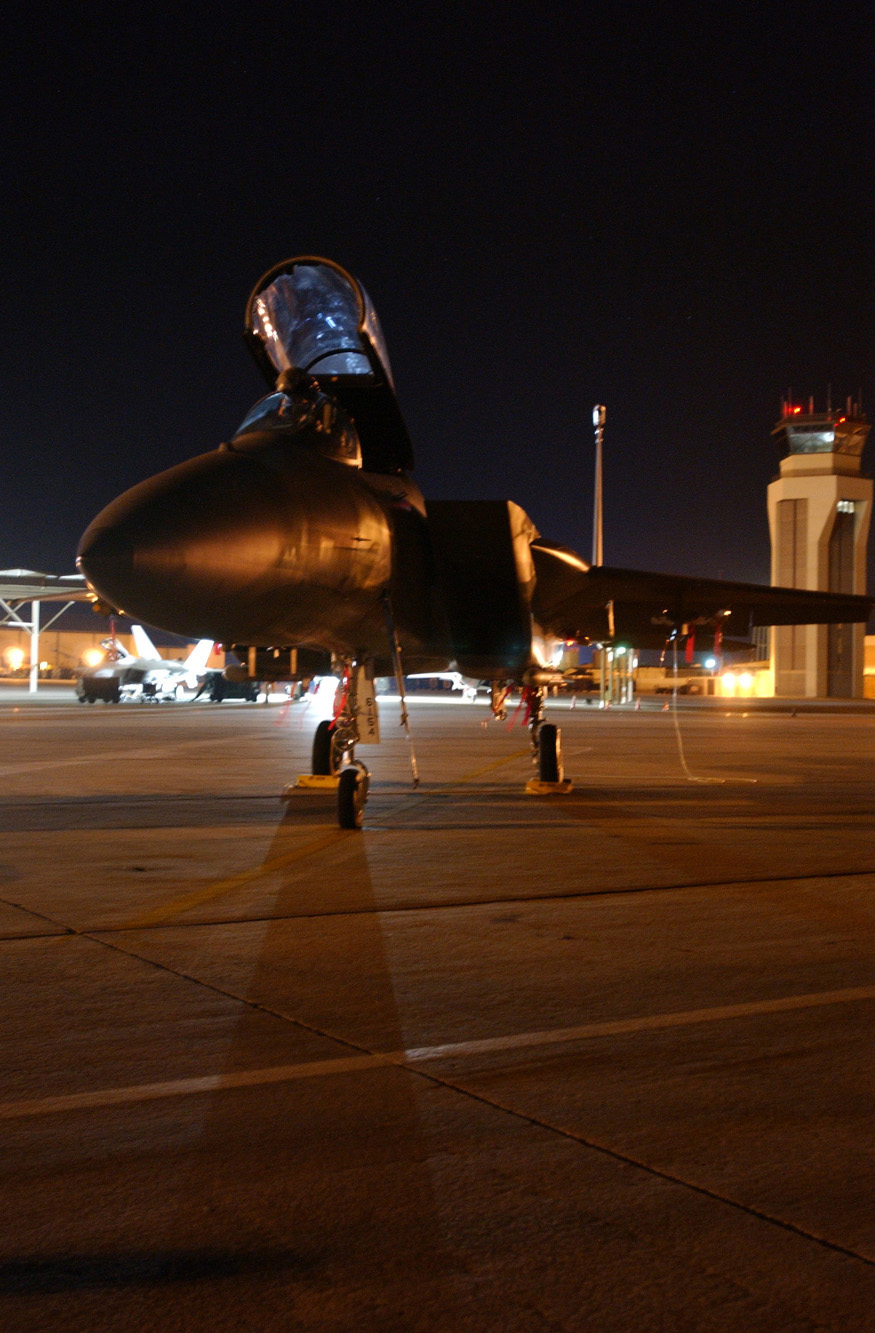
Ready to go

TYNDALL AIR FORCE BASE, Fla. - An F-15C Eagle from the 493rd Fighter Squadron, Royal Air Force Lakenheath, England, sits on the parking ramp before the scramble competition of William Tell 2004 here Nov. 8. The two-week competition challenges pilots, weapons loaders and maintainers from five F-15 fighter wings.